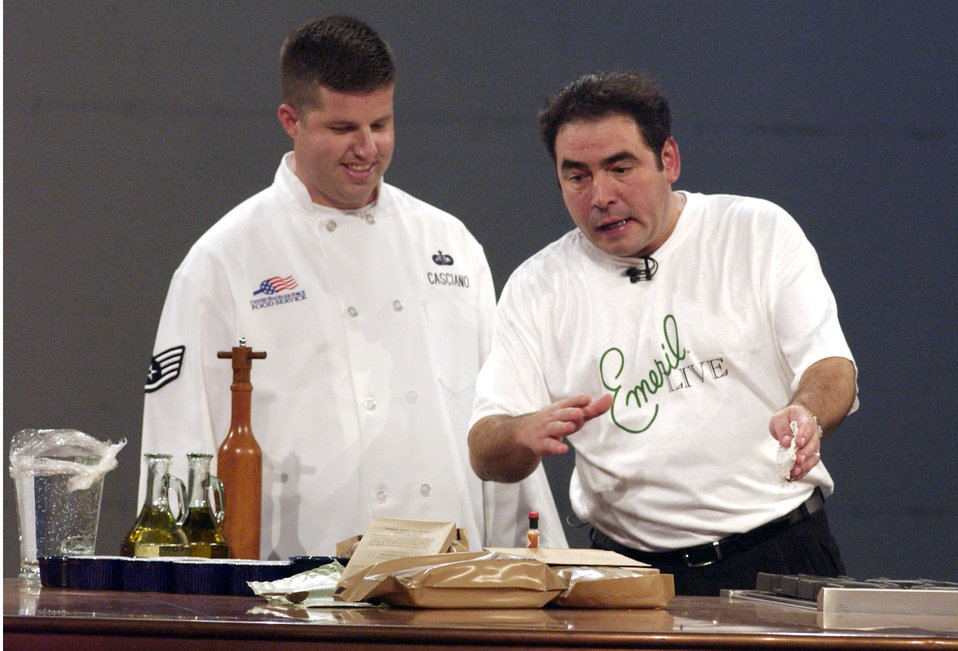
Emeril cooks

MCGUIRE AIR FORCE BASE, N.J. -- Staff Sgt. Kevin Casciano, a chef with the 305th Services Squadron, and Emeril Lagasse discuss meals ready to eat during the Sept. 25 taping of the celebrity chef's Thanksgiving special here. The show is scheduled to air Nov. 16. Check local listings for times.